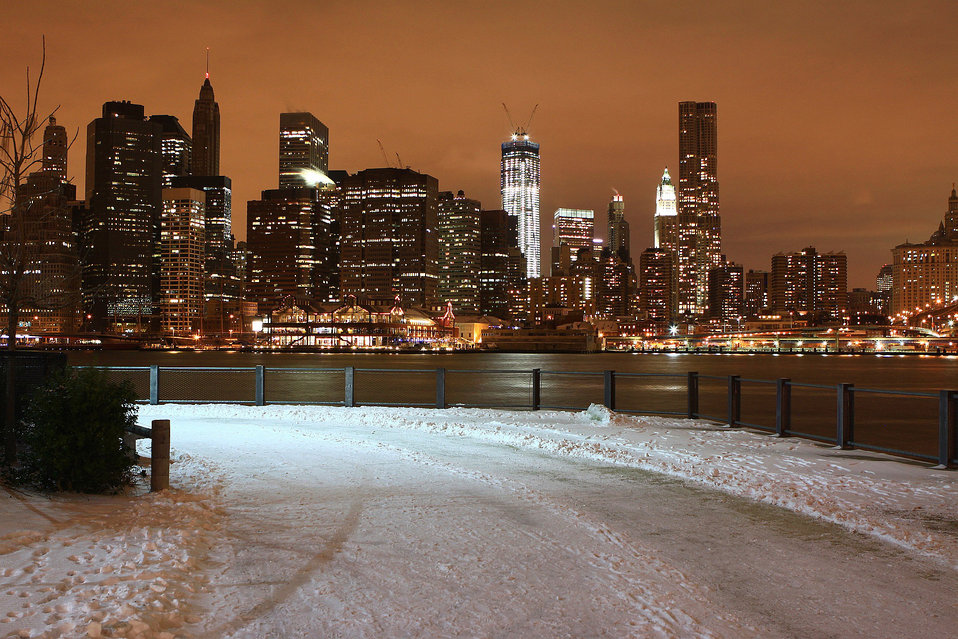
Under white blanket

City winter scenery at night.